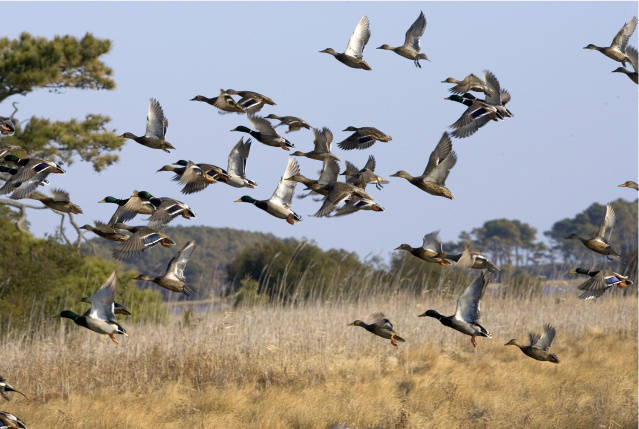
Waterfowl flying over wetland at Chincoteague National Wildlife Refuge (VA)

Waterfowl flying over wetlands at Chincoteague National Wildlife Refuge, located at the southern end of Assateague Island, Virginia.